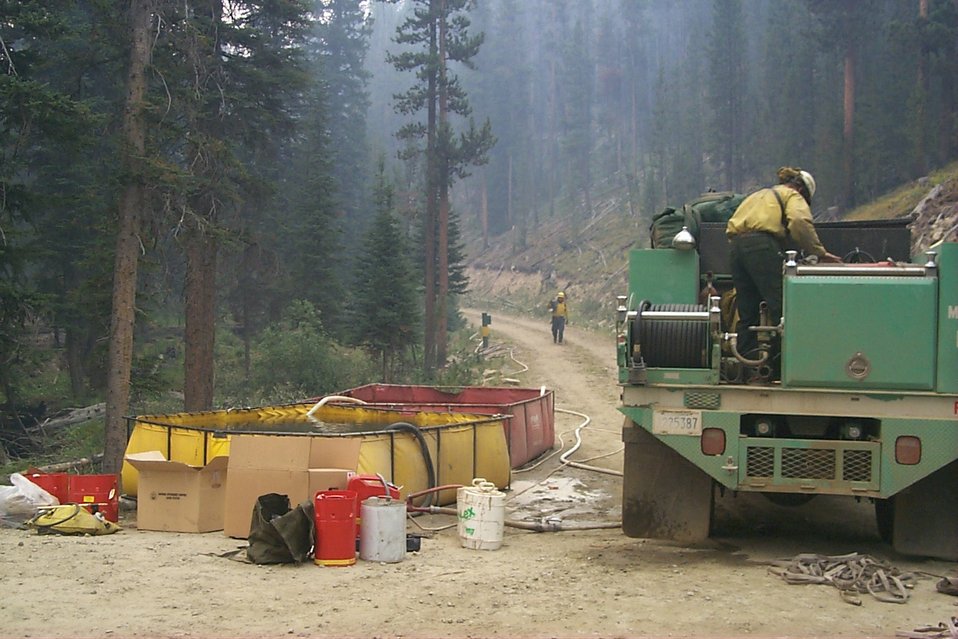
Field water storage Fire Clearwater Fire Salmon Field Office USRD Upper Snake River District